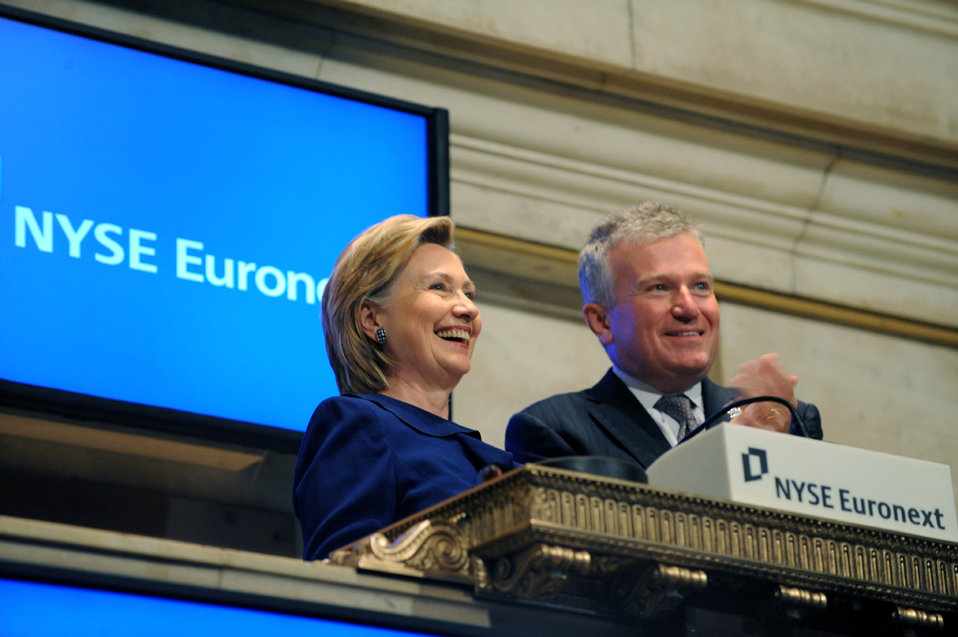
UNGA 2009: Secretary Clinton Meets With New York Stock Exchange CEO

U.S. Secretary of State Hillary Rodham Clinton on the floor of the New York Stock Exchange (NYSE) with NYSE Chief Executive Officer Duncan Niederauer during the 64th Session of the UN General Assembly in New York City, New York September 21, 2009.